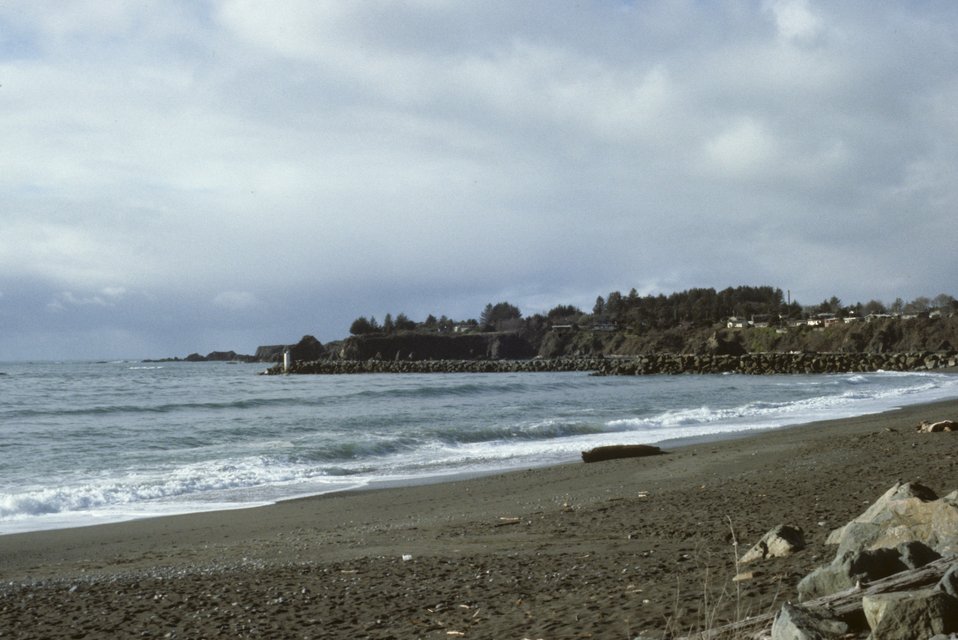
A scene along the southern Oregon coast.